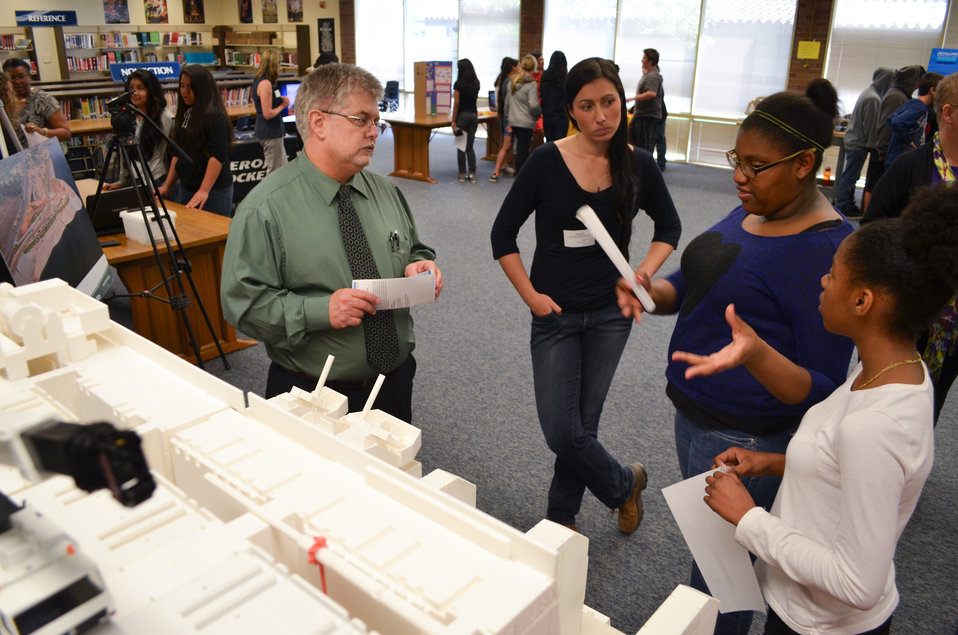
Kit Carson Middle School students discuss the Folsom Dam's new auxiliary spillway model

Rick Poeppelman (left), engineering division chief with the U.S. Army Corps of Engineers Sacramento District, and Ashley Lassiter with Granite Construction (second from left) discuss the Folsom Dam's new auxiliary spillway with students during Science Day at Kit Carson Middle School, in Sacramento Calif., April 8, 2014. Representatives from the Corps and Granite Construction interacted with around 140 seventh and eighth graders in an effort to get students interested in science, technology, engineering and math related fields.